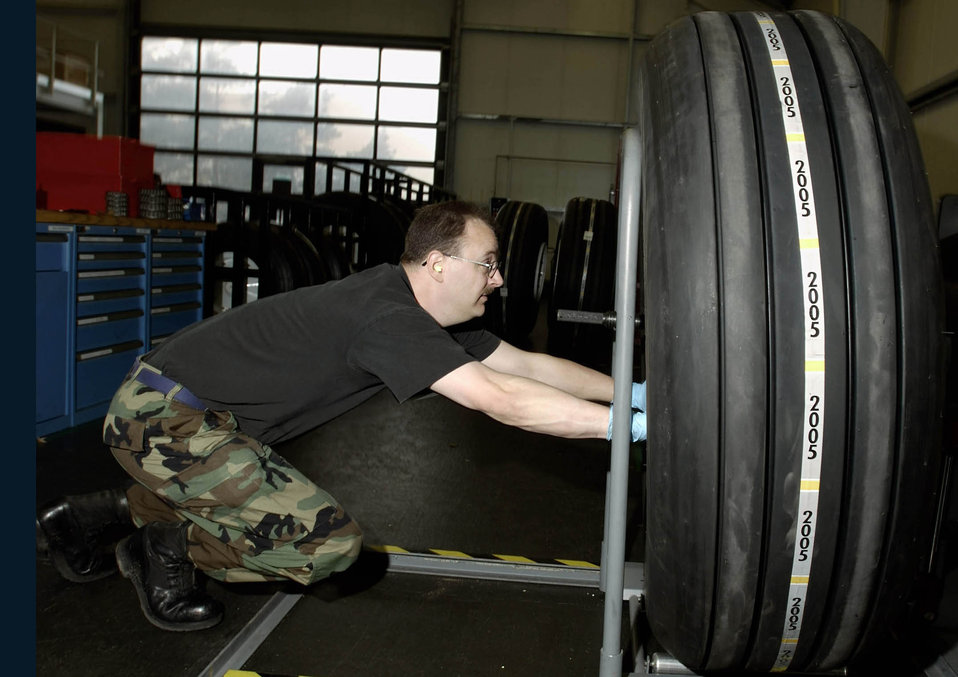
Feeling tired?

RAMSTEIN AIR BASE, Germany -- Staff Sgt. Bruce Hegner slides a tire onto a C-130 Hercules wheel half at the 86th Maintenance Squadron's wheel and tire centralized intermediate repair facility here. Sergeant Hegner is the facility's noncommissioned officer in charge.